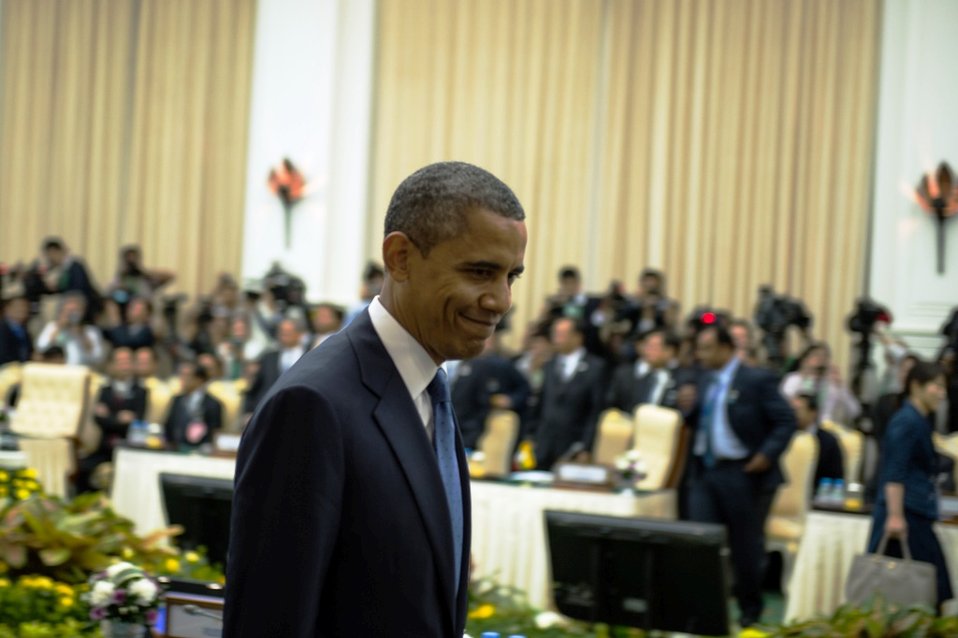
President Obama Participates in the East Asia Summit Plenary Session

U.S. President Barack Obama participates in the East Asia Summit Plenary Session in Phnom Penh, Cambodia, November 20, 2012. President Obama is the first U.S. President to visit Cambodia.